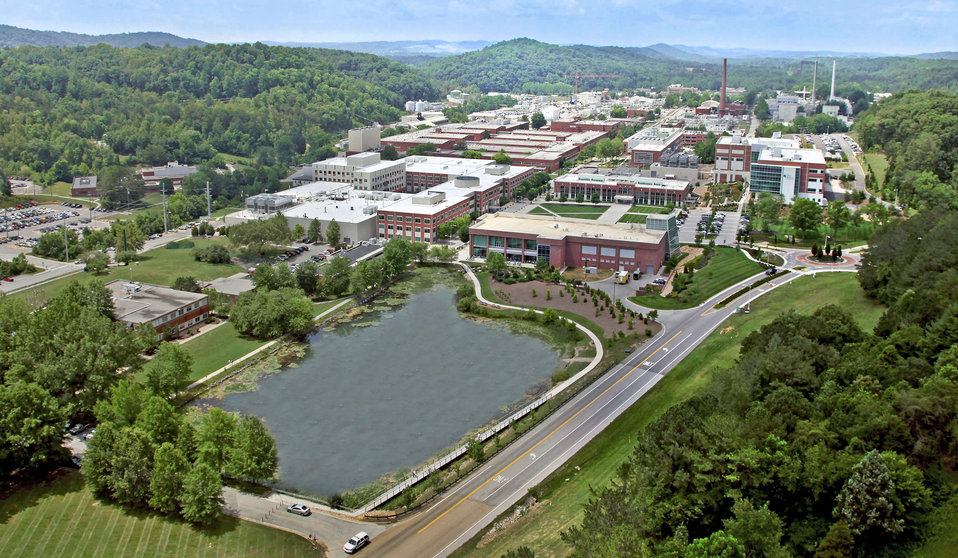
ORNL Aerial 2012

Aerial of the Oak Ridge National Laboratory (ORNL) in 2012. ORNL has greatly expanded during the past decade and services as DOE’s largest multi-program laboratory.